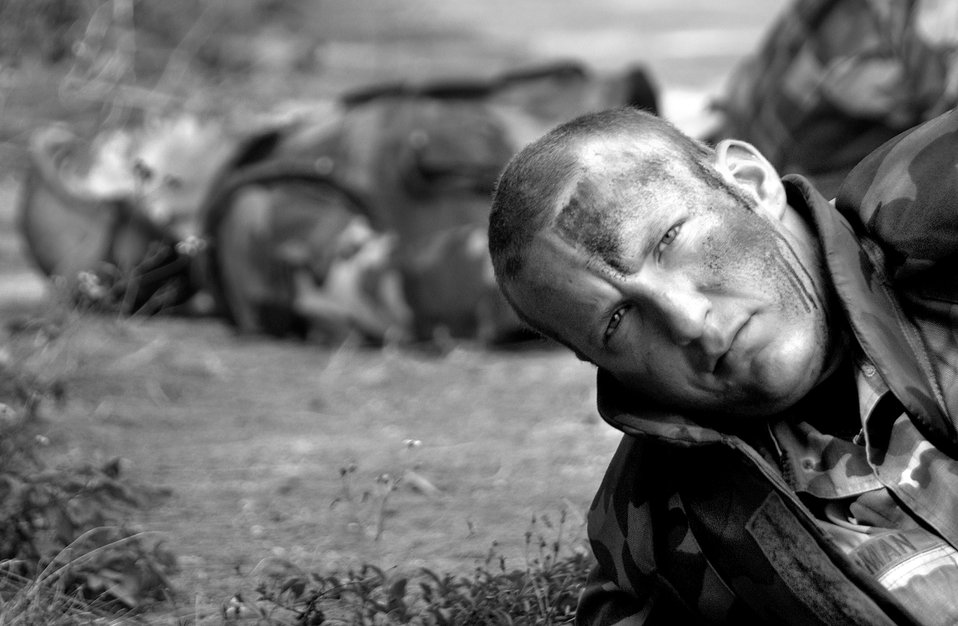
GIRRE

Staff Sgt. Joshua Huddleston plays an accident victim during the Guam Initial Readiness Response Exercise, or GIRRE, Tuesday, March 14, 2006. The GIRRE is an annual island-wide exercise between Andersen Air Force Base and Naval Marianas to train on war plan deployments and joint disaster response skills. The mission of this exercise is readiness and to prepare AEF Airmen with skills they can use to survive downrange. Sergeant Huddleston is with the 36th Munitions Squadron.